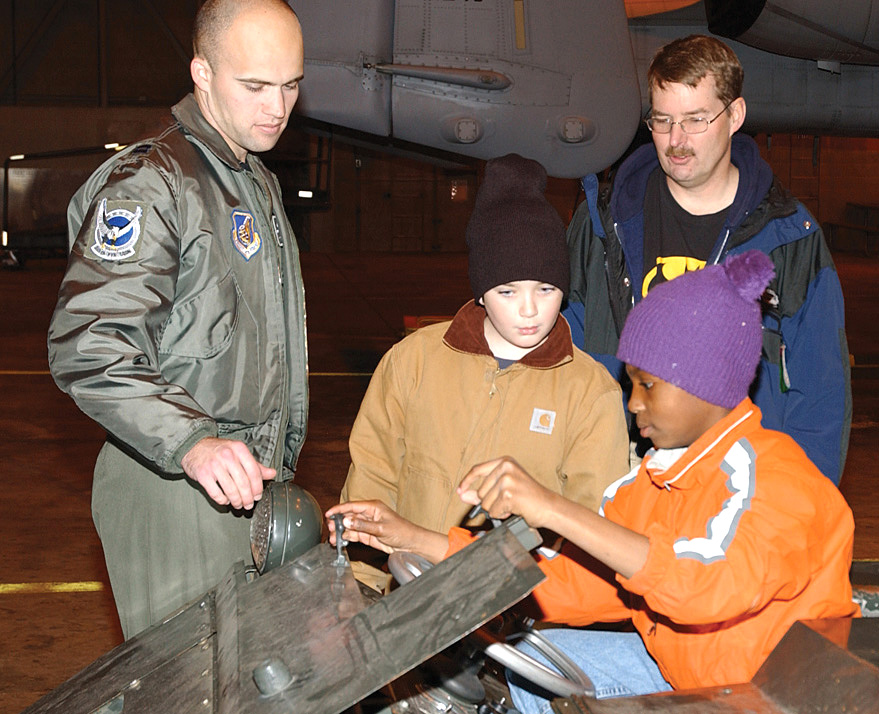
Big Brothers, Sisters visit Eielson fighter squadron

Capt. Travis Burton explains the functions of an MJ-1 vehicle used to load munitions onto aircraft Sept. 30 at Eielson Air Force Base, Alaska. The captain is a pilot with the 355th Fighter Squadron.